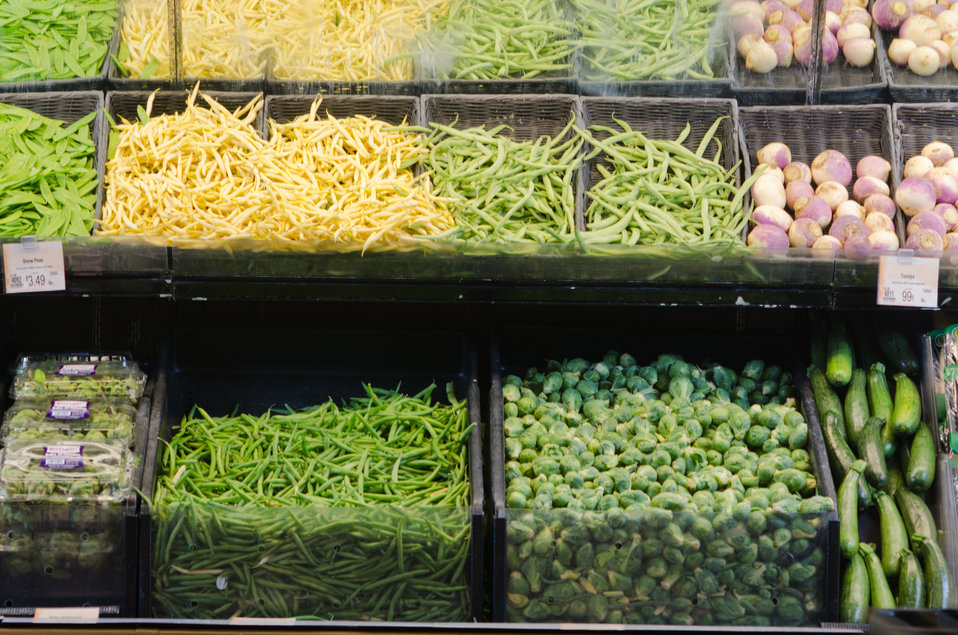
Brussel sprouts, beans and other produce at a grocery store in Fairfax, Virginia, on March 3, 2011.